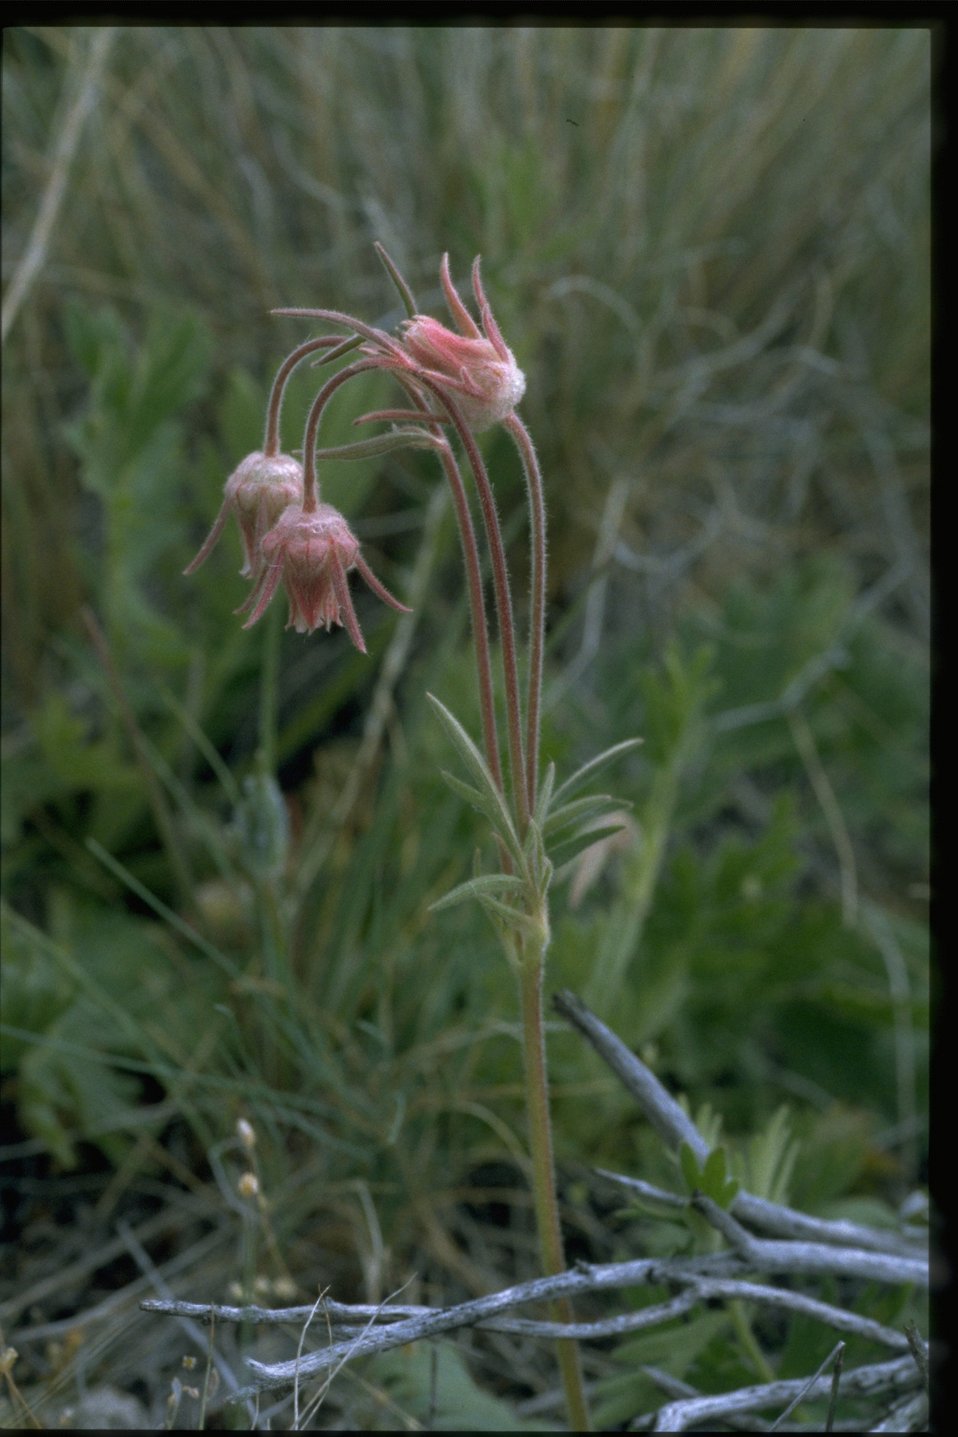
Farshot of old man's whiskers (Geum triflorum).